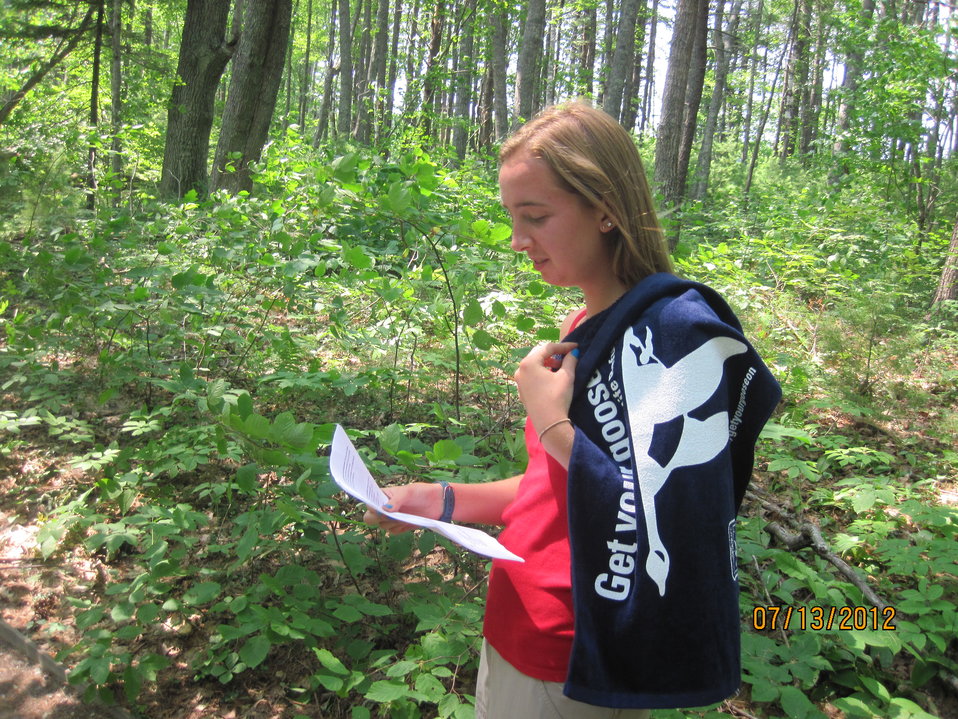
Get Your Goose On!

Intern Brynna Bolger does some program preparation with the GYGO! towel.

Photo Credit: bri Rudinsky/USFWS